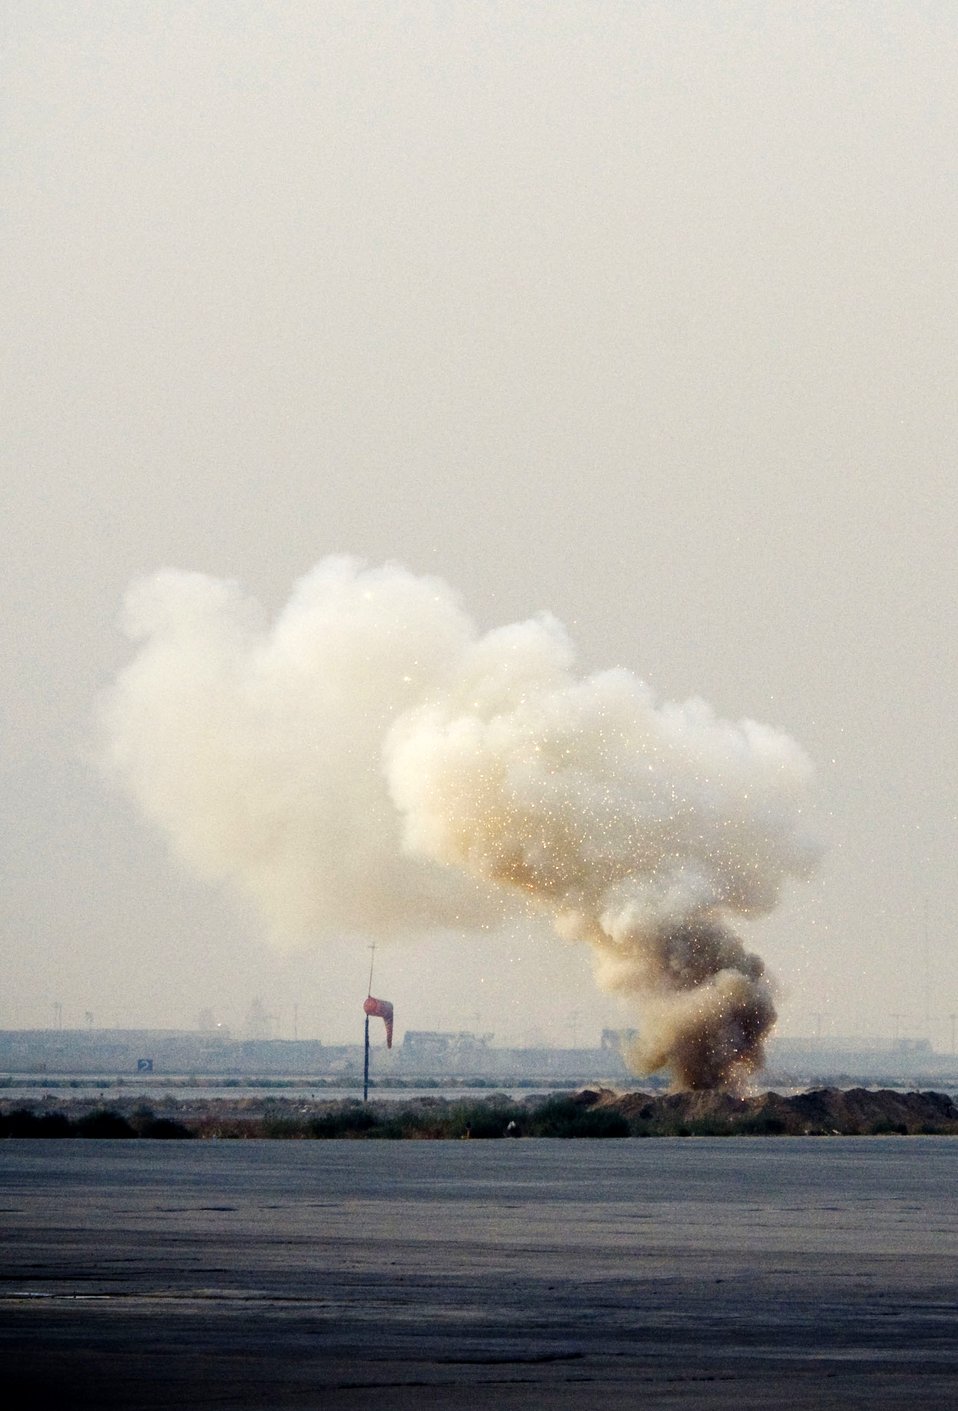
Airmen respond to buried threat in Afghanistan

Sparks fly as a thermite grenade burns through an old OFAB 100 Soviet bomb on the flightline Nov. 7 at Bagram Airfield, Afghanistan. Personnel and aircraft were evacuated to a safe distance just in case there was a full-sized detonation, but in this case, that proved unnecessary.